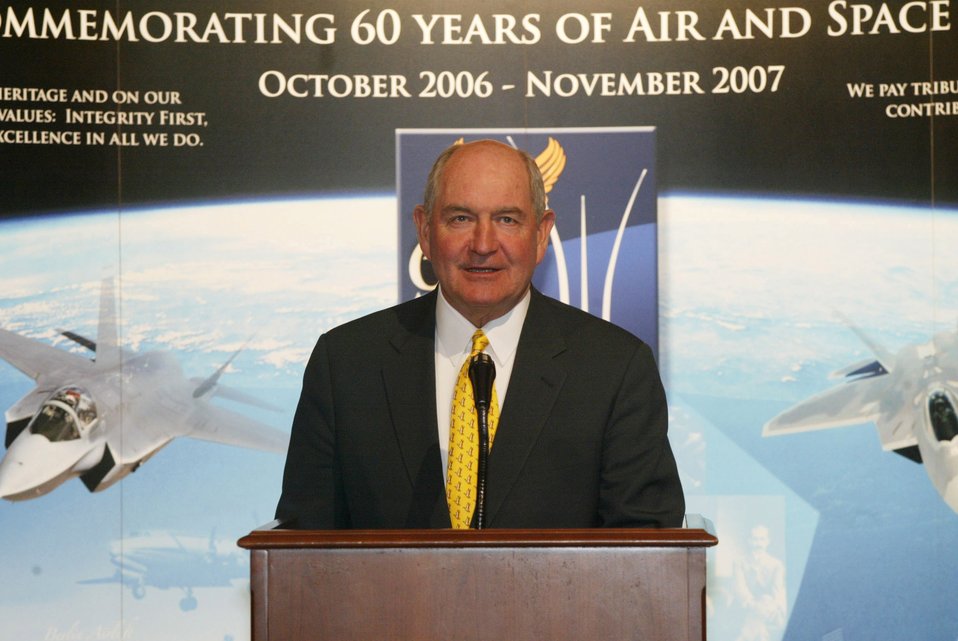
Atlanta kicks off 'Heritage to Horizons' celebration

Georgia Gov. Sonny Perdue welcomes the